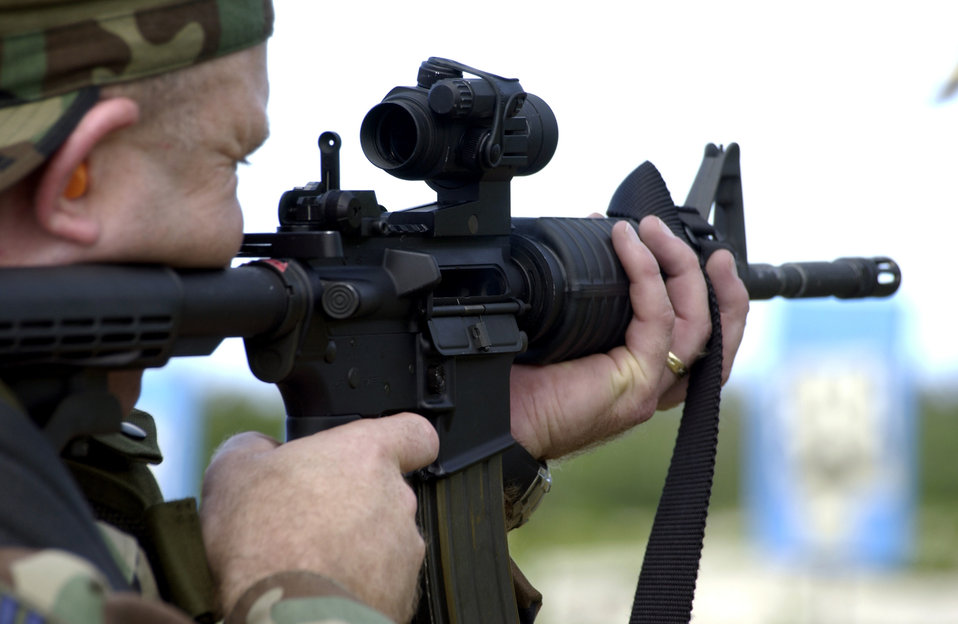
Ready, aim, fire

ANDERSEN AIR FORCE BASE, Guam -- Master Sgt. Gregory Derkatch fires his M-4 rifle during the daytime firing range portion of the tactical rifle qualification course here recently. The course is required for all 36th Security Forces Squadron members twice a year. He is an expert marksman assigned to the 36th SFS.